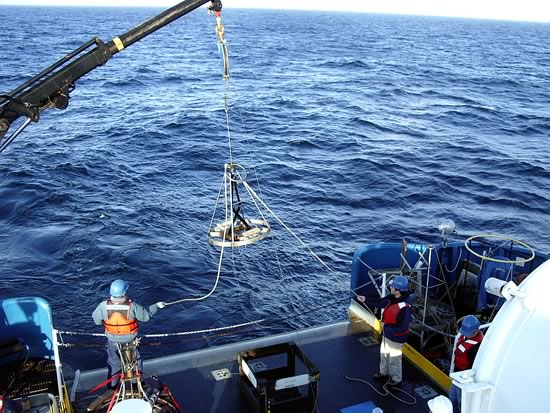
Ocean survey mission

August 17, 2010. Crew members of The Bold, EPA's ocean survey vessel, send down the 'bottom grab' for sampling.